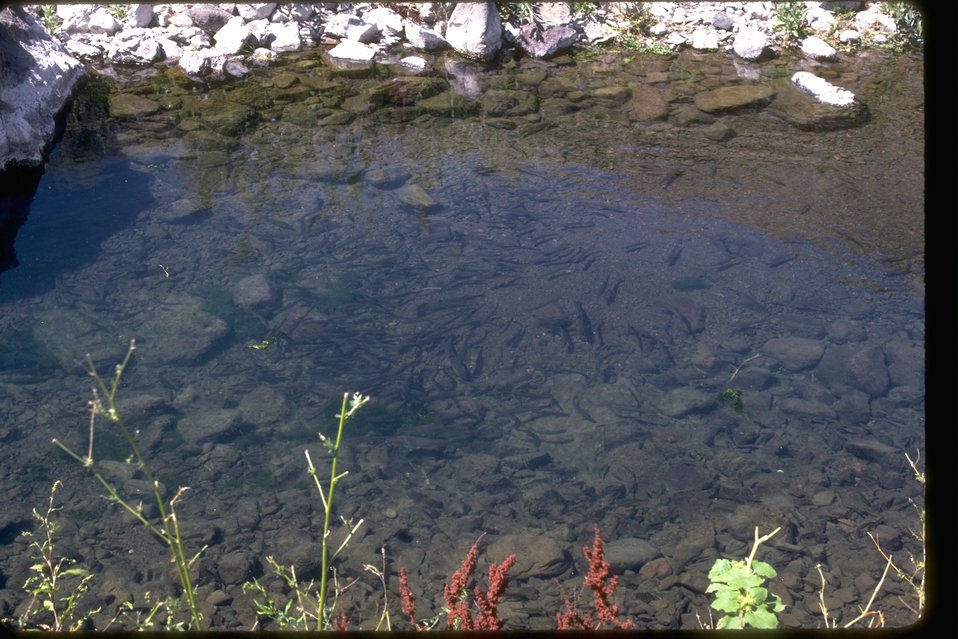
Many small fish in the water of the Red Bend of Cottonwood Creek. OR 3-32